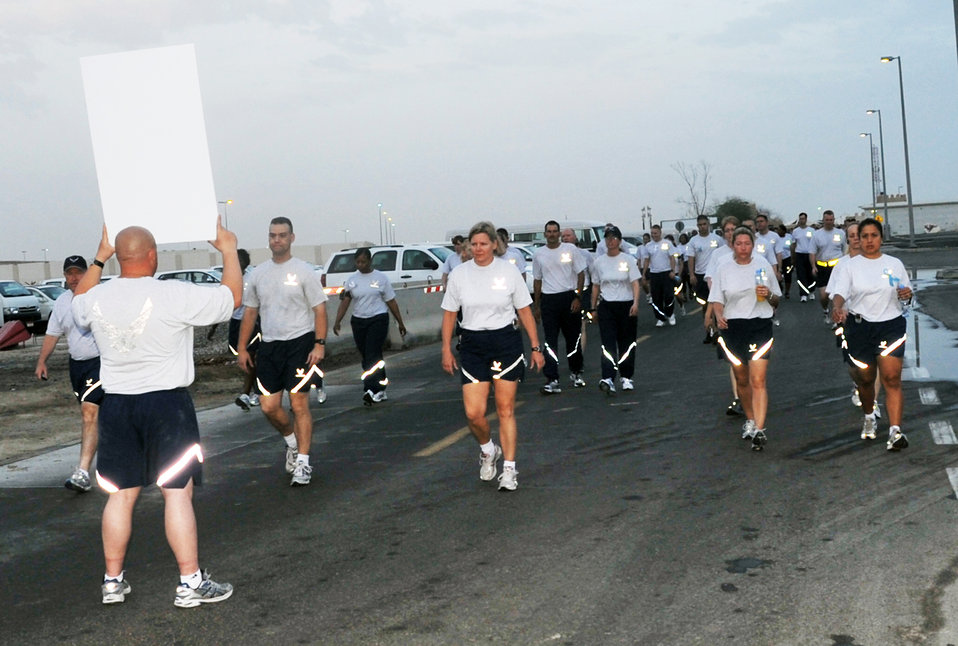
Deployed wing holds walking event observing Sexual Assault Awareness Month

Airmen participate in the